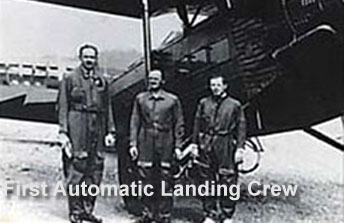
C-14B

The three occupants of the C-14B and their plane, which made history's first automatic landing, were Capt. Carl J. Crane, who invented the system, Capt. George V. Holloman, who flight tested it, and Raymond Stout, a Wright Field civilian electronic engineer who assisted in developing the system.